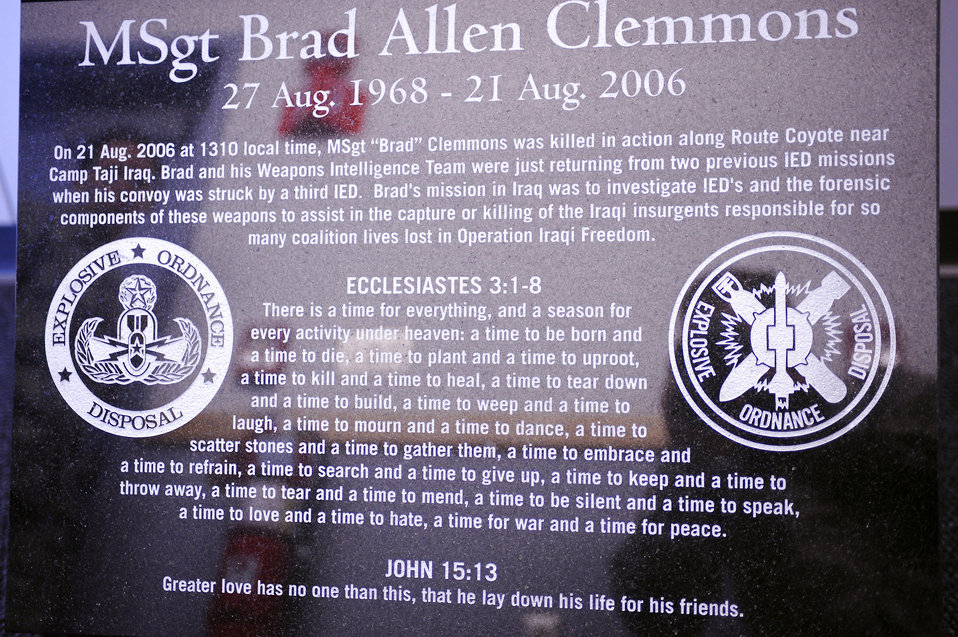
Iceman Team dedicates facility to lost comrade

A memorial dedication ceremony in honor of Master Sgt. Brad Clemmons, 354th Civil Engineer Squadron explosive ordnance disposal flight, was held Aug. 21. Sergeant Clemmon's family, friends and co-workers attended the building dedication ceremony to honor his ultimate sacrifice.